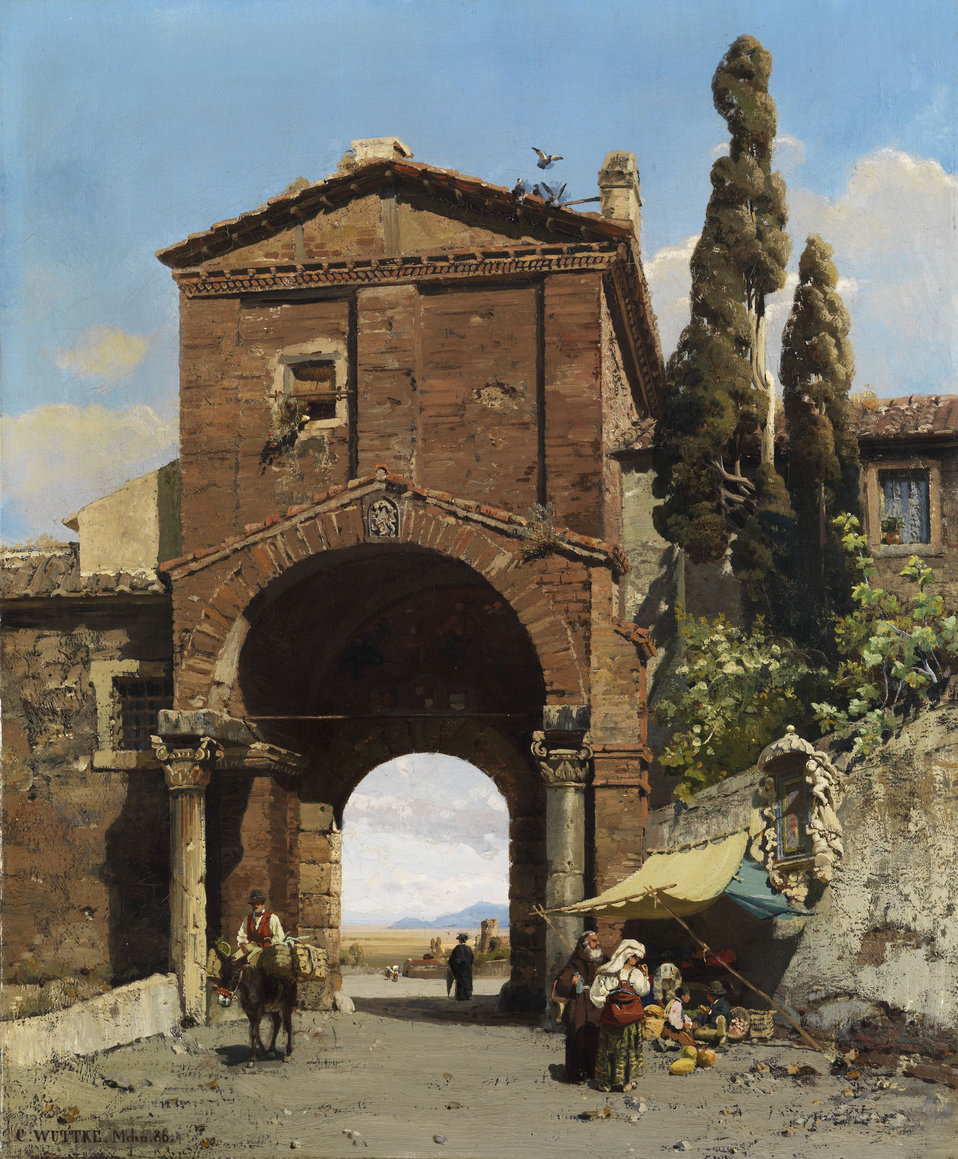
Deutsch: Römischer Torbogen mit Ausblick in die Campagna. Öl auf Leinwand. 60 x 49,5 cm.